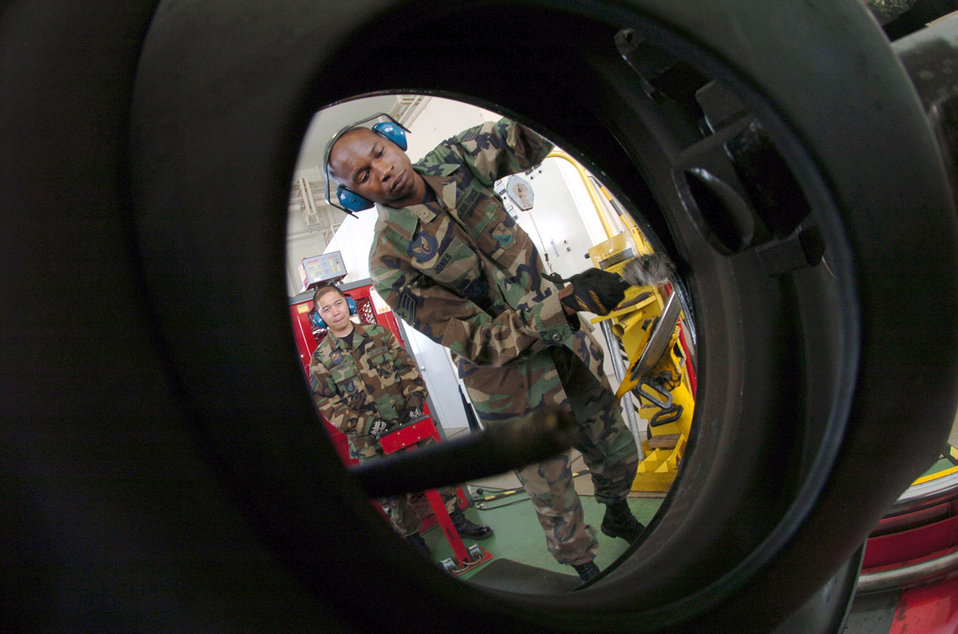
Hole in one

YOKOTA AIR BASE, Japan -- Staff Sgt. Tygi Jones (foreground) uses a steel brush to clean the rim of a tire here while Staff Sgt. Mike Aquino watches Aug. 4. Sergeants Jones and Aquino are mechanics with the 374th Logistics Readiness Squadron.